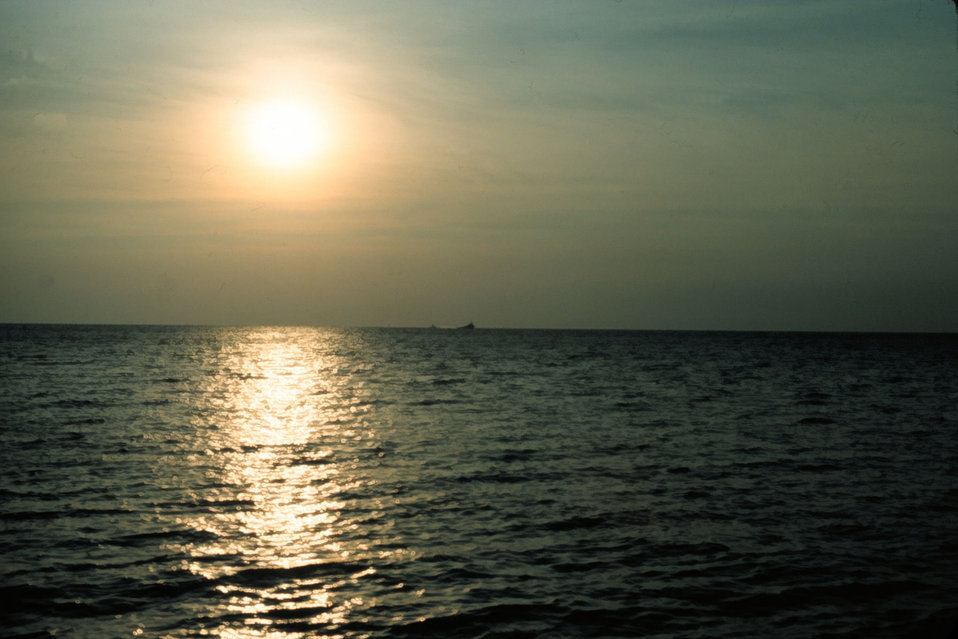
Hazy day sunset